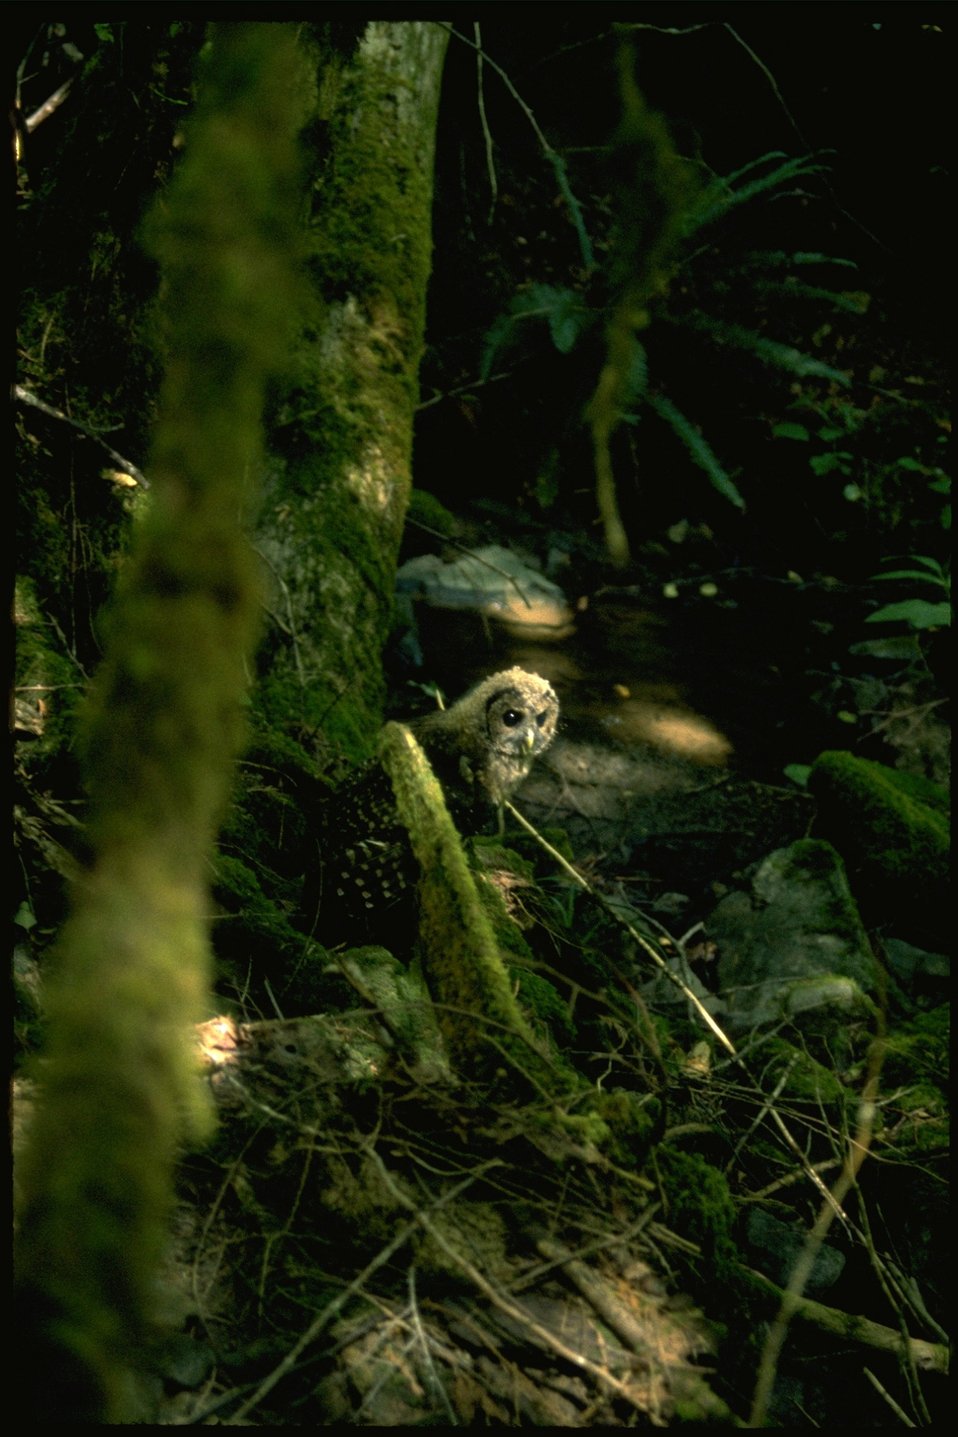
Juvenile Northern Spotted Owl in tree.